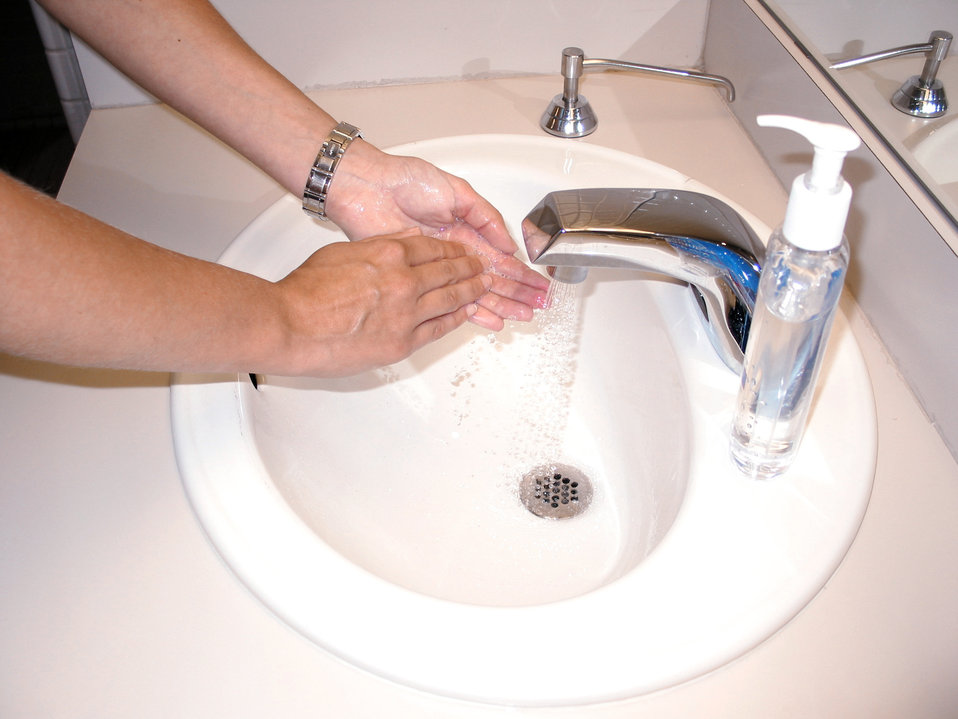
This image demonstrates how a smallpox vaccinee washes her hands after handling her vaccination site bandage.